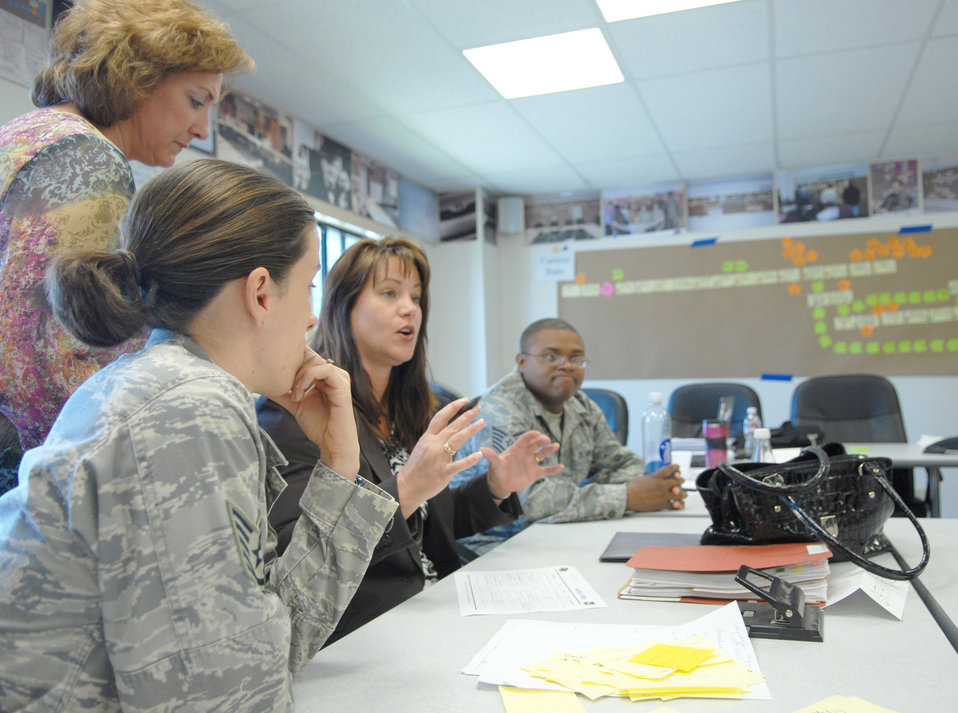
AFSO 21 helps ease finance program headache

Members of the Air Force Smart Operations for the 21st Century, or AFSO 21, action team discuss ways to streamline the process for the production of the annual statement of assurance. The team used a successful eight-step method to trim a six-month process down to a two-month process. The ideas could have possible Department of Defemse implications.